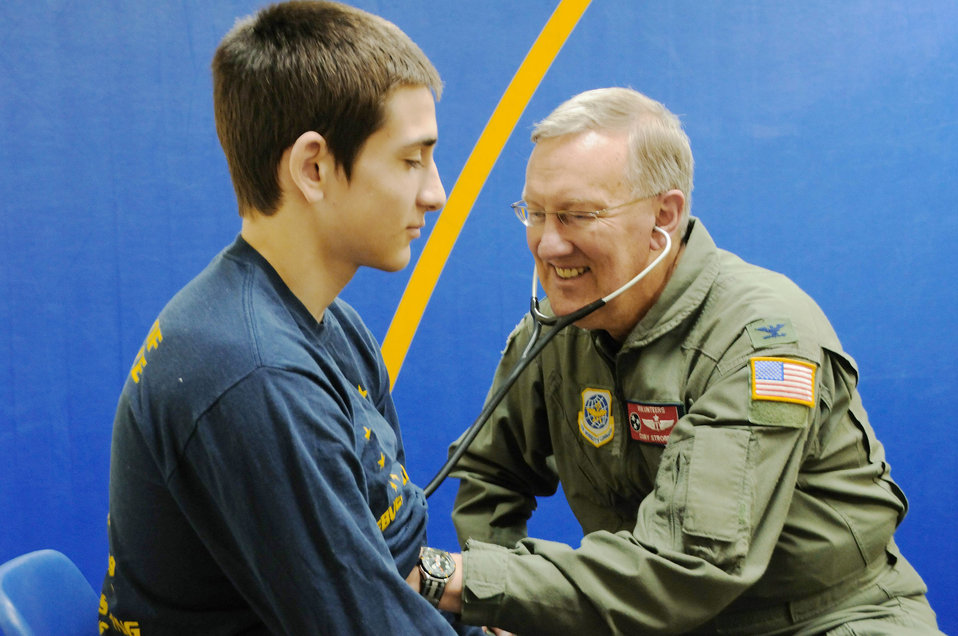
Operation Arctic Care members helping people in remote areas

Col. Cory Strobel conducts a physical April 18, 2010, on Alaskan native Matthew Rae, a 17-year-old Maniilaq High School student in order to medically clear him to play sports in Kotzebue, Alaska. The medical service is part of Operation Artic Care 2010. Colonel Strobel is the chief of aero medical services, for the 134th Medical Group, at McGhee Tyson Air National Guard Base, Tenn.